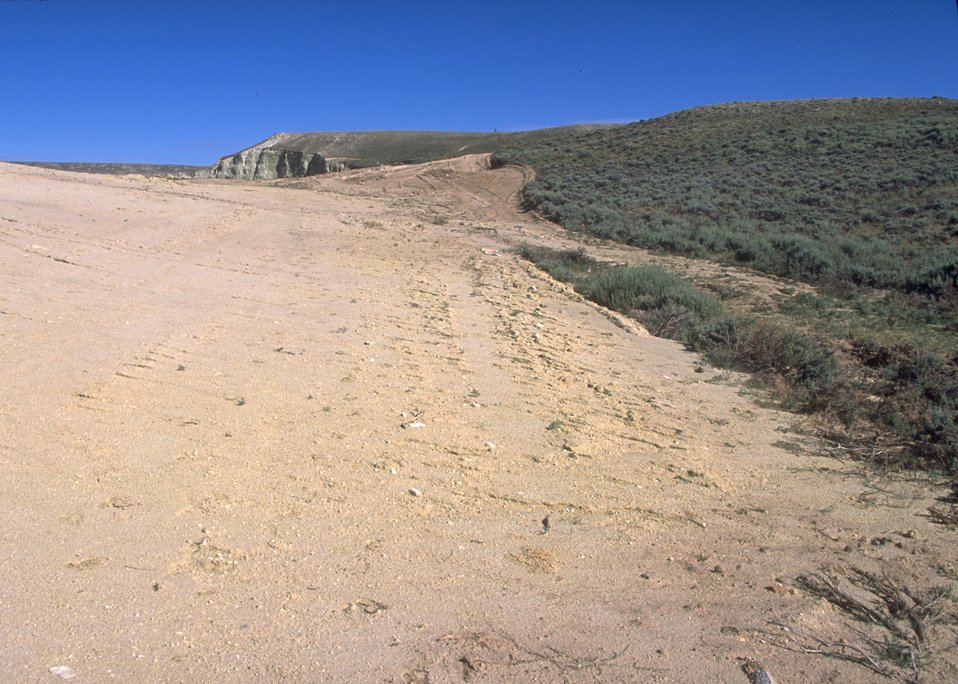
Gas Hill Abandoned Mine Lands in various stages of rehabilitation, Lander Field Office.